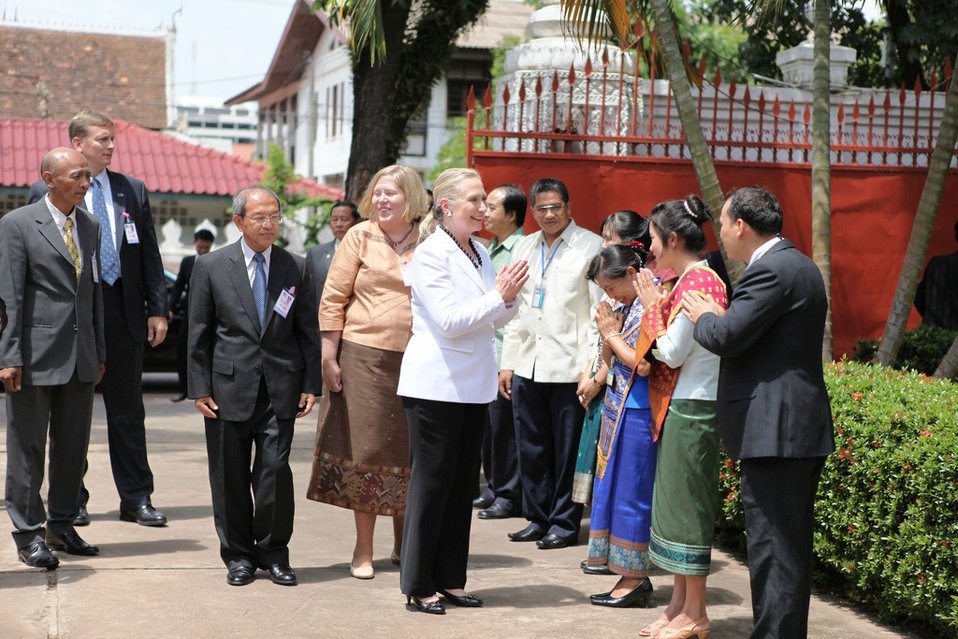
Secretary Clinton

U.S. Secretary of State Hillary Rodham Clinton, left, is greeted upon arrival at the Ho Phra Keo Temple Wednesday, July 11, 2012 in Vientiane, Laos.